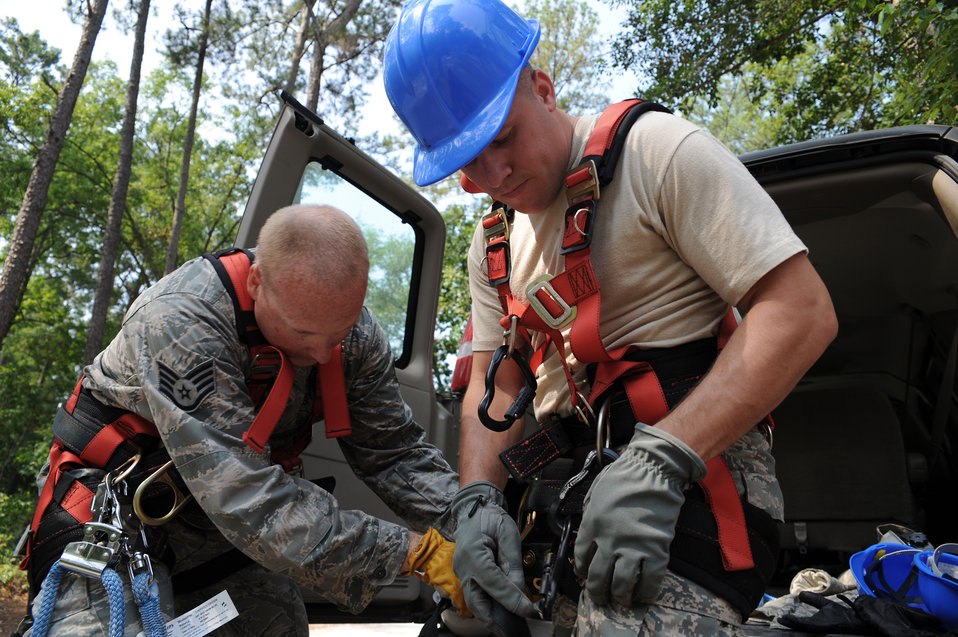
Airmen climb a radio tower

Staff Sgt. John Kingsley assists Tech. Sgt. Nathan Swab with a safety harness June 14, 2011, in preparation for a radio frequency tower training exercise at Joint Base Charleston, S.C. Sergeant Kingsley and Sergeant Swab are radio frequency transmissions craftsmen assigned to the 628th Communications Squadron.